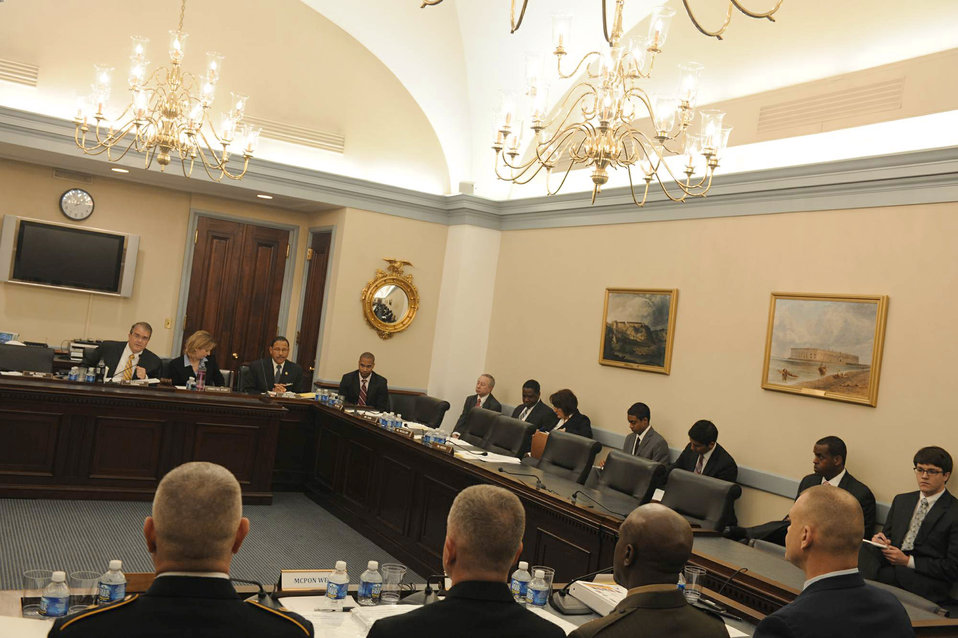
Chief Roy

The senior enlisted leaders from the Air Force, Marines, Navy and Army testify before the House Subcommittee for Military Construction, Veterans Affairs and Related Agencies March 30, 2011, in Washington. In the foreground from the right are Chief Master Sgt. of the Air Force James A. Roy, Sergeant Major of the Marine Corps Carlton Kent, Master Chief Petty Officer of the Navy Rick West, and Sergeant Major of the Army Raymond Chandler. The committee focused on quality-of-life issues for enlisted members serving in the military.